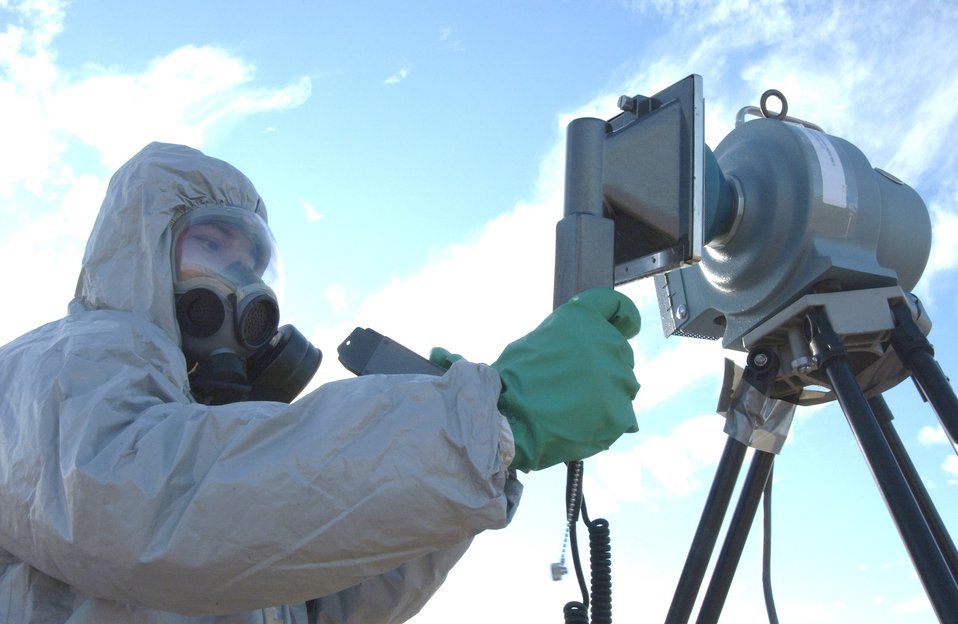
Vigilant Shield 07

Staff Sgt. Xavier Goco monitors radiation levels and tests for potential contamination using a high volume air sampling monitor and an ADM-300 at a simulated aircraft crash site on Davis-Monthan Air Force Base, Ariz., Dec. 4 during Vigilant Shield 07. Vigilant Shield 07 is a joint nuclear weapon accident exercise designed to train Department of Defense and federal agencies on response efforts as a cohesive team. The exercise involved a variety of agencies representing the county, state and federal governments. Sergeant Goco is assigned to the 355th Aerospace Medicine Squadron.